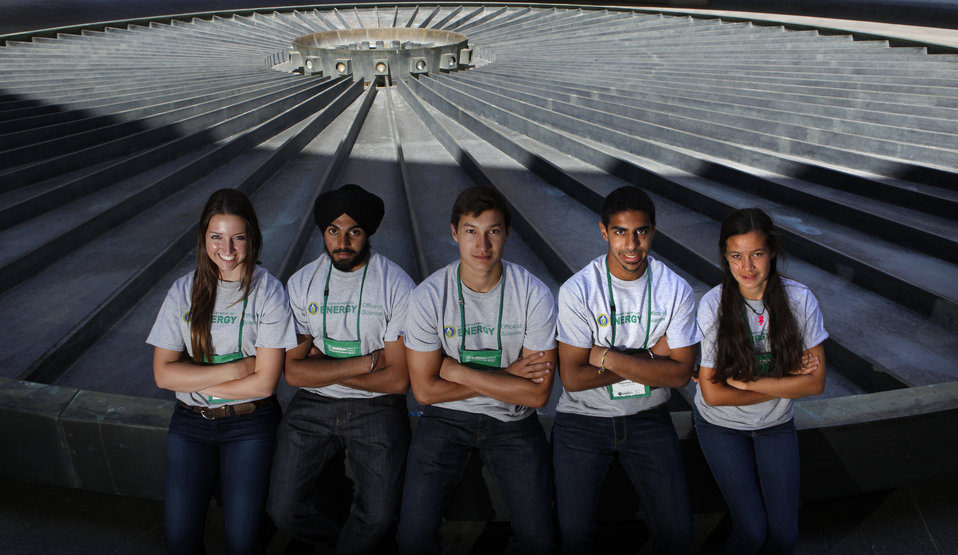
Students from Tokay High School in Lodi, CA compete in the 2013 National Science Bowl, in Washington, DC.

The Department of Energy created the National Science Bowl in 1991 to encourage students to excel in mathematics and science and to pursue careers in these fields.